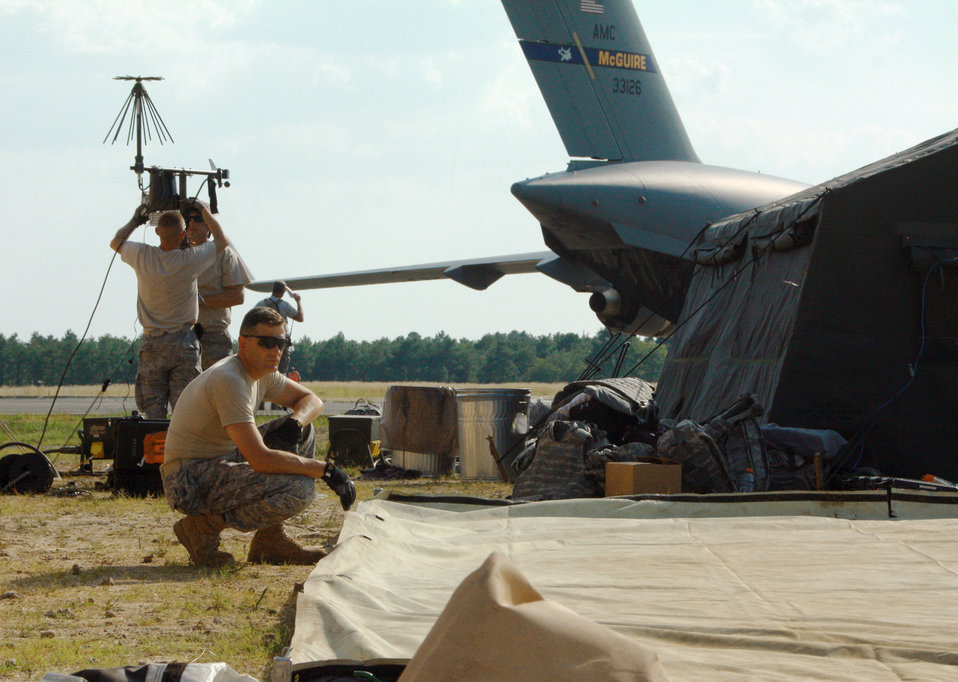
Eagle Flag

Chaplain (Lt. Col.) James Ehrman takes a quick break while assembling a tent after arriving July 27, 2010, at Joint Base McGuire-Dix-Lakehurst, N.J., to participate in joint exercise Eagle Flag, simulating humanitarian relief efforts in the fictional nation of